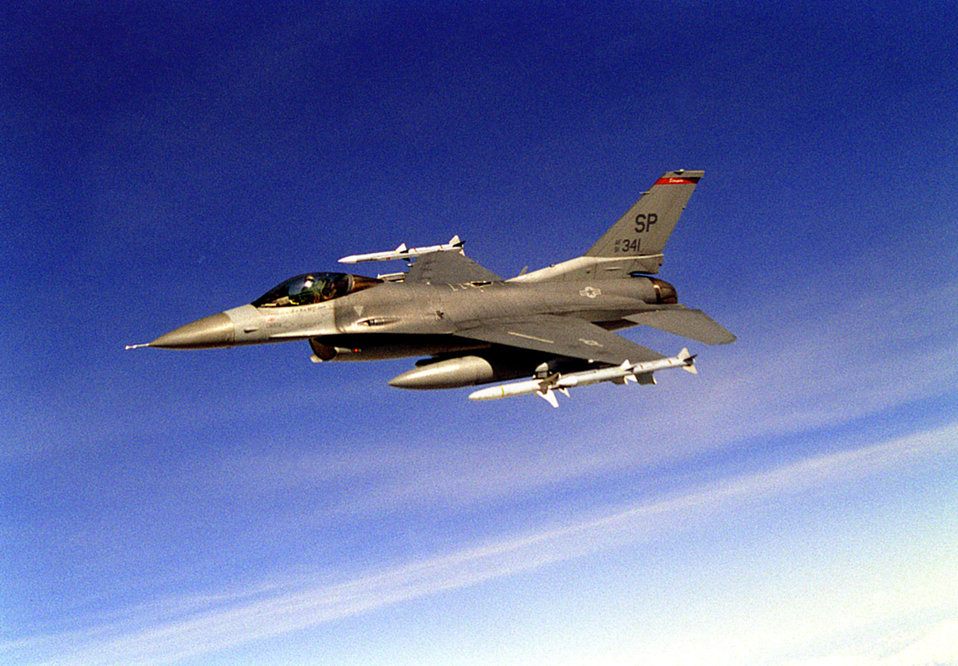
Soaring Falcon

OPERATION NORTHERN WATCH -- A U.S. Air Force F-16CJ Fighting Falcon soars in the skies over Turkey before being refueled in flight for an Operation Northern Watch mission March 6, 1999. Northern Watch is the coalition enforcement of the no-fly-zone over Northern Iraq. The Fighting Falcon is from the 22nd Expeditionary Fighter Squadron, deployed from Spangdahlem Air Base, Germany.